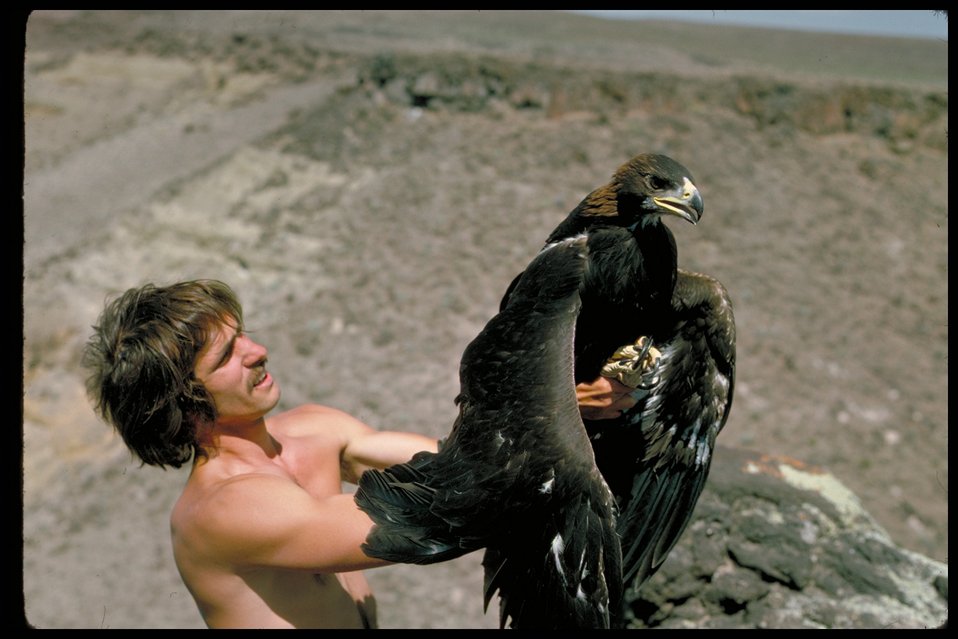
Golden Eagle Birds of Prey National Conservation Area BOP Owyhee Field Office LSRD Lower Snake River District